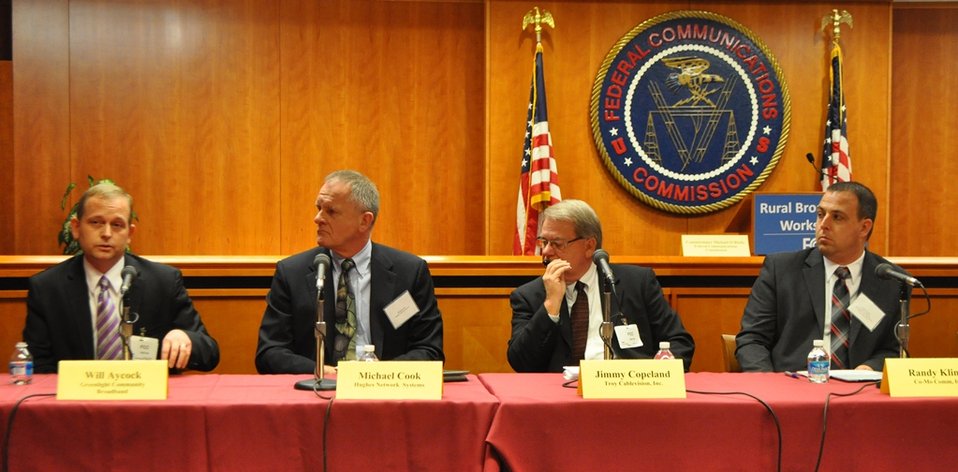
Rural Broadband Workshop: March 19, 2014

Panel 2: Rural Broadband Buildout - Effective Strategies & Lessons Learned